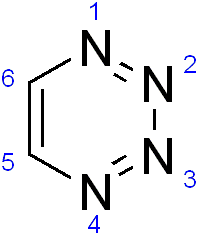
Chemical structure of en:tetrazine created with ChemDraw.